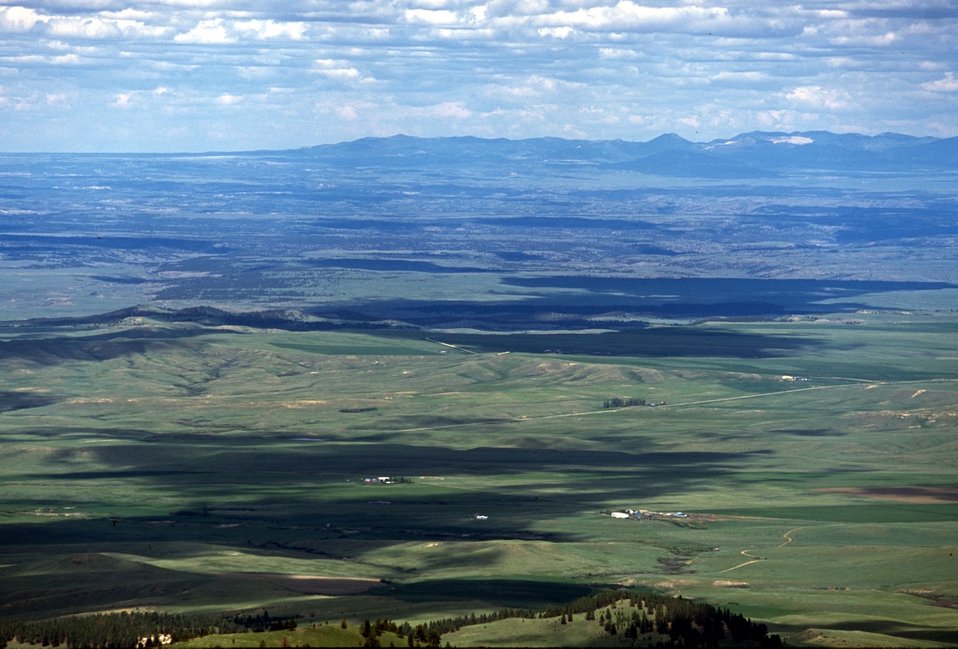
Clouds leaving shadowy patterns on a valley in the Judith Mountains